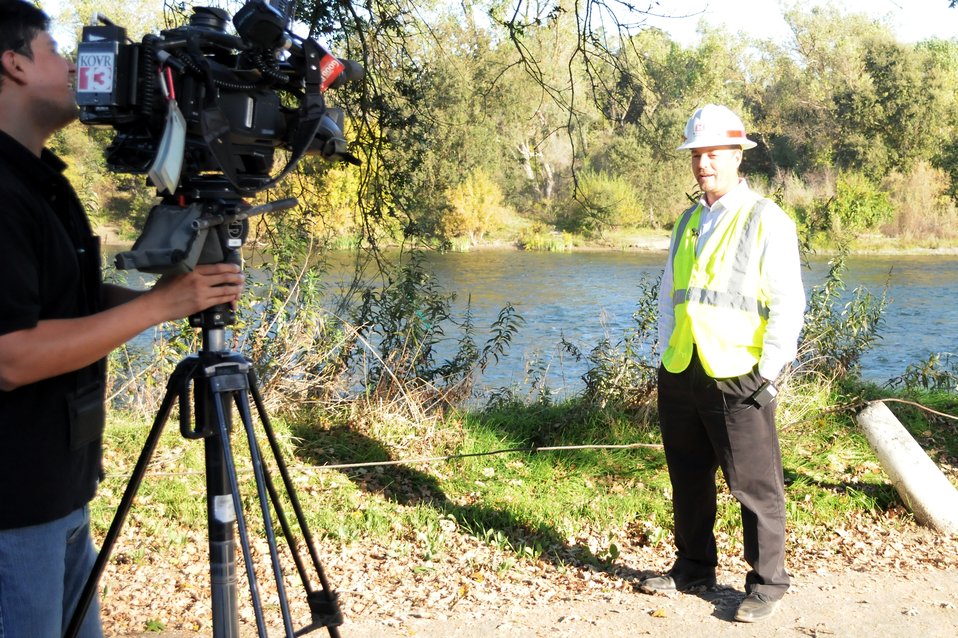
CBS Sacramento’s Morning Show

U.S. Army Corps of Engineers Sacramento District project manager Dave Cook (right) participates in an interview with CBS Sacramento’s Morning Show to explain why two critical erosion sites are under repair along the American River’s south bank, Nov. 1, 2011. Cook is overseeing repairs of the sites, part of the Sacramento River Bank Protection Project to repair erosion, levees and reduce flood risk for Sacramento.